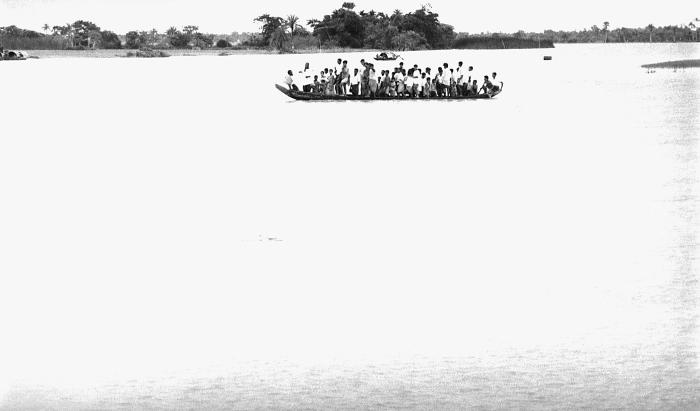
This photograph depicted a 'boat taxi', which appeared to be overloaded, as it was transporting a large group of Bangladesh residents. This image was part of a series provided by Dr. Stan Foster, and captured by Pierre Claquin, M.D., B.A.C., who at the time was a member of the World Health Organization's Smallpox Eradication Program. It was part of a series photographed by former E.I.S. officer, Stanley O. Foster M.D., M.P.H., and was one of a series entitled 'The Story of One Smallpox Jeep', which depicted the travails faced by the jeep, and its occupants of public health practitioners, as they road through the Bangladesh countryside in an attempt to eradicate smallpox from the country.